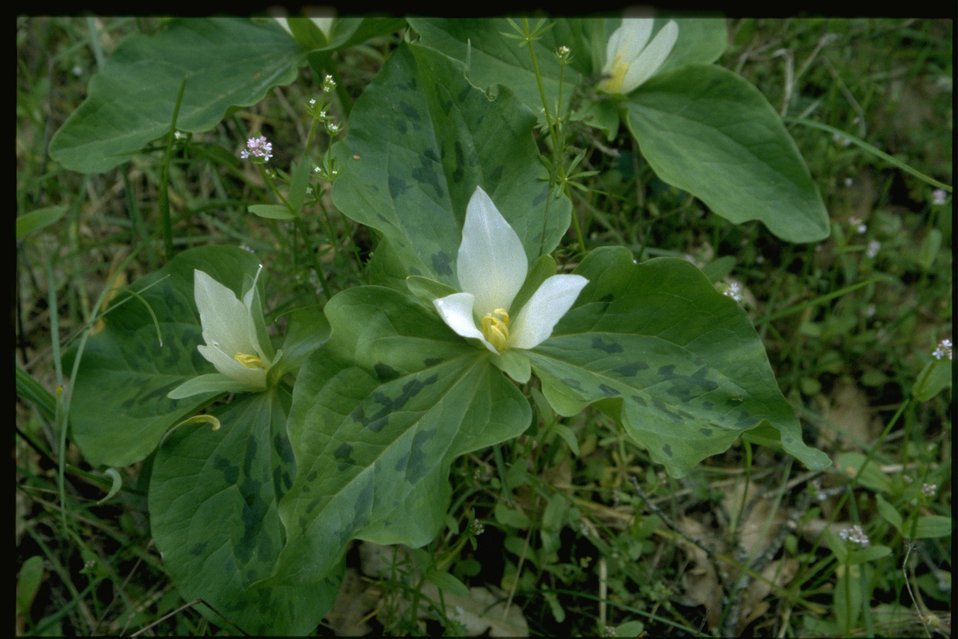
Medium shot of Trillium albidum.